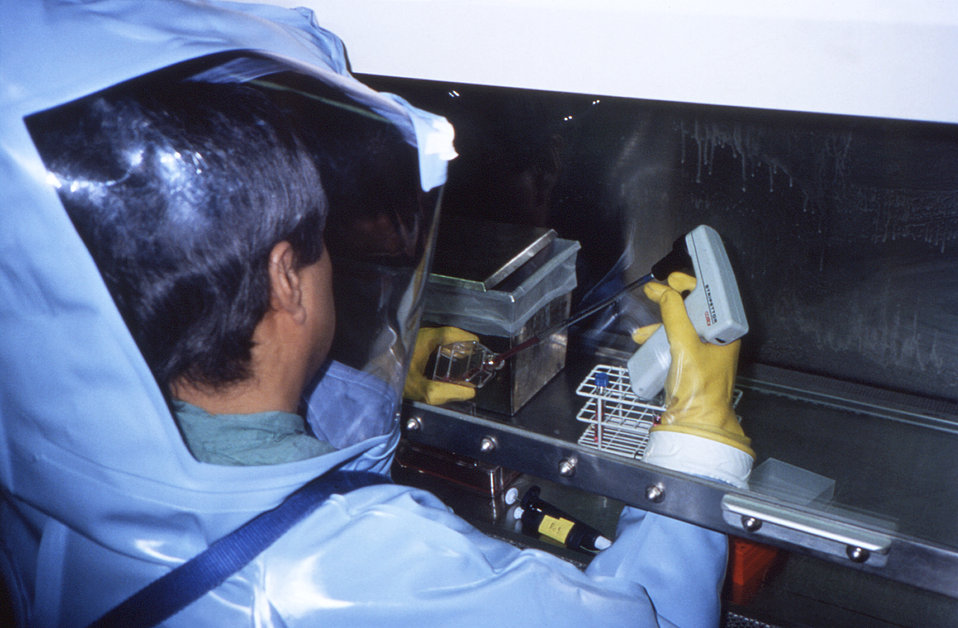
This photograph depicted a Centers for Disease Control (CDC) laboratorian, as he was working in a maximum-containment laboratory, beneath a flow hood inside one of the CDC's BSL-4 (Bio Safety Lab-Level 4) laboratories.